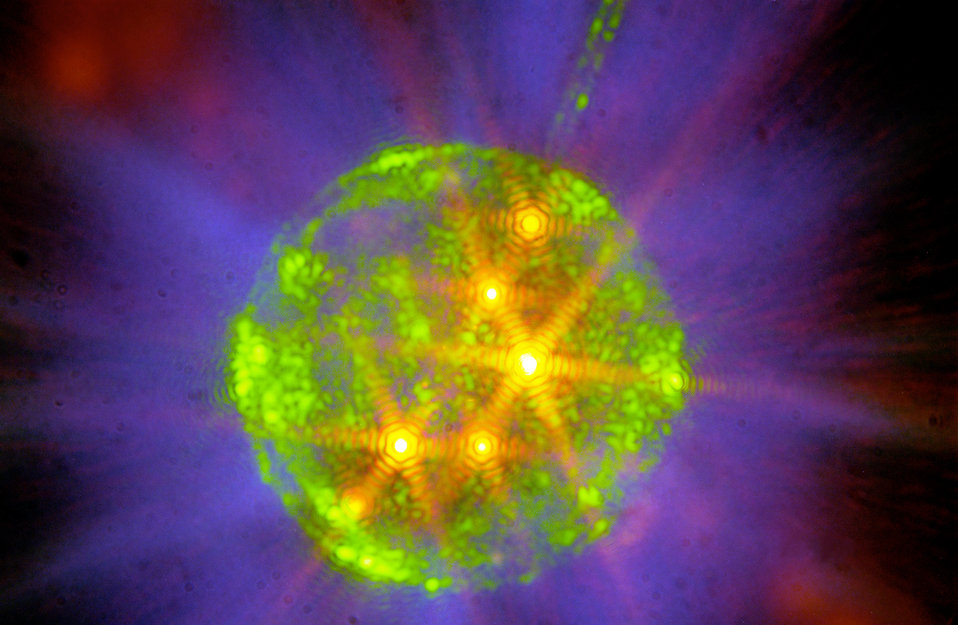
Visible camera photograph of a gold-coat pointing target show on Omega.